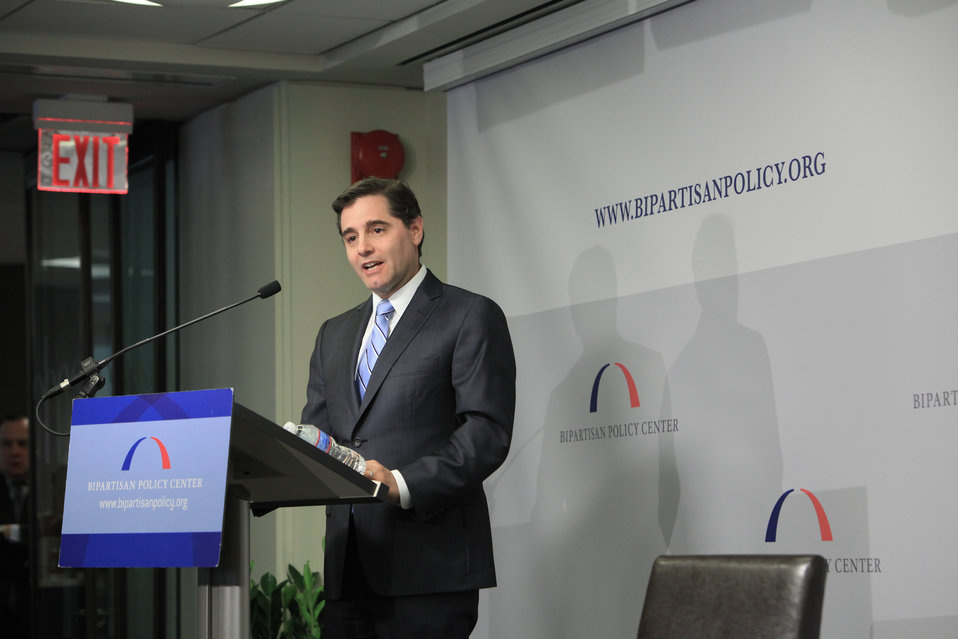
FCC Chairman Genachowski speaks about Cybersecurity at the Bipartisan Policy Center in Washington, DC, on February 22, 2012.